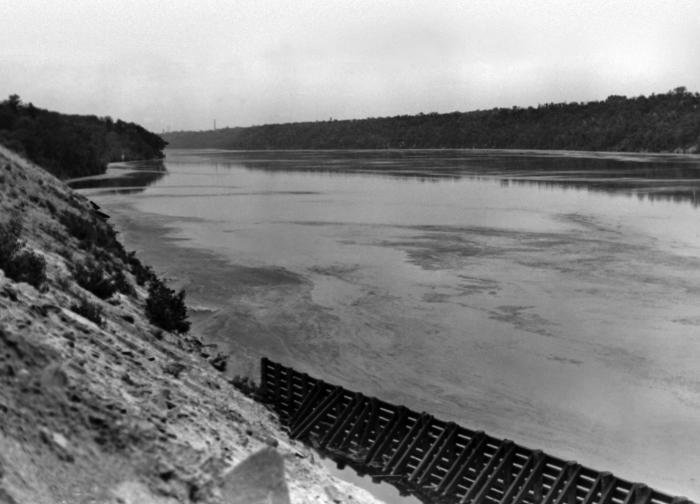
This was a historic view of the Mississippi River from its west bank under the Ford Bridge looking upstream, June 4, 1933, just outside Minneapolis, Minnesota.